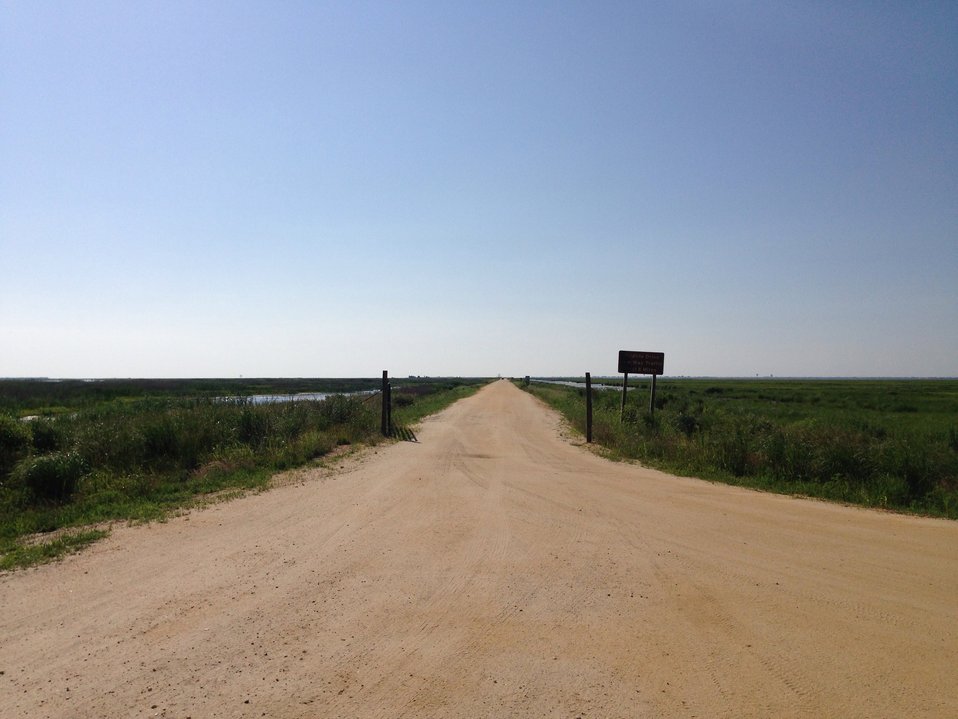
Forsythe wildlife drive after hurricane repairs

Entrance to wildlife drive looking east.